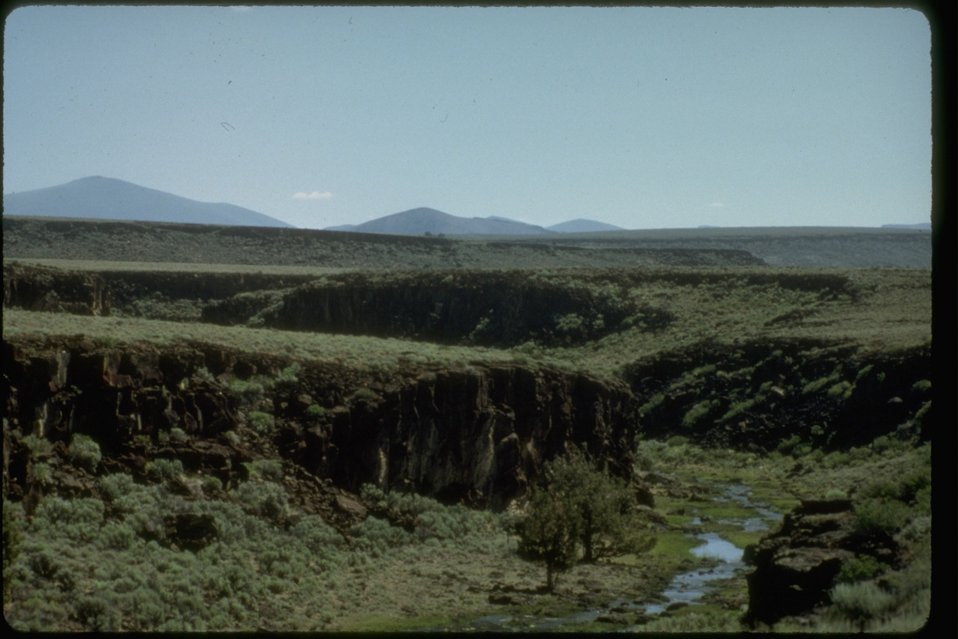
View of the canyon rim view on Guano Creek. OR 1-132